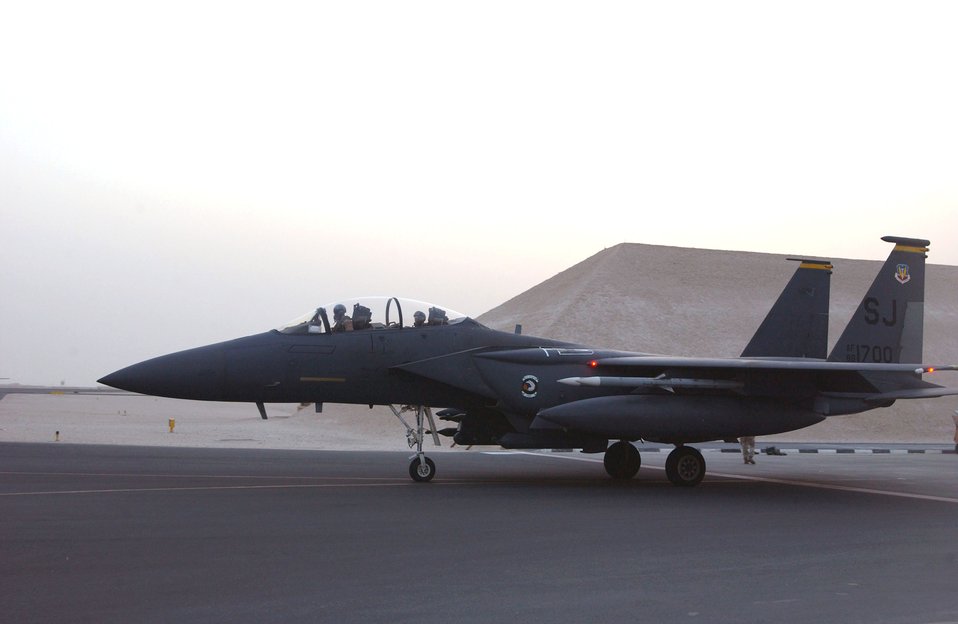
CENTAF Air Power Summary - Feb. 26

F-15E Strike Eagles, similar to this one taxiing from its protective bunker for a night combat mission over Iraq, play a critical role in providing close-air support to ground forces in contact with anti-Iraqi forces as part of Operation Iraqi Freedom.